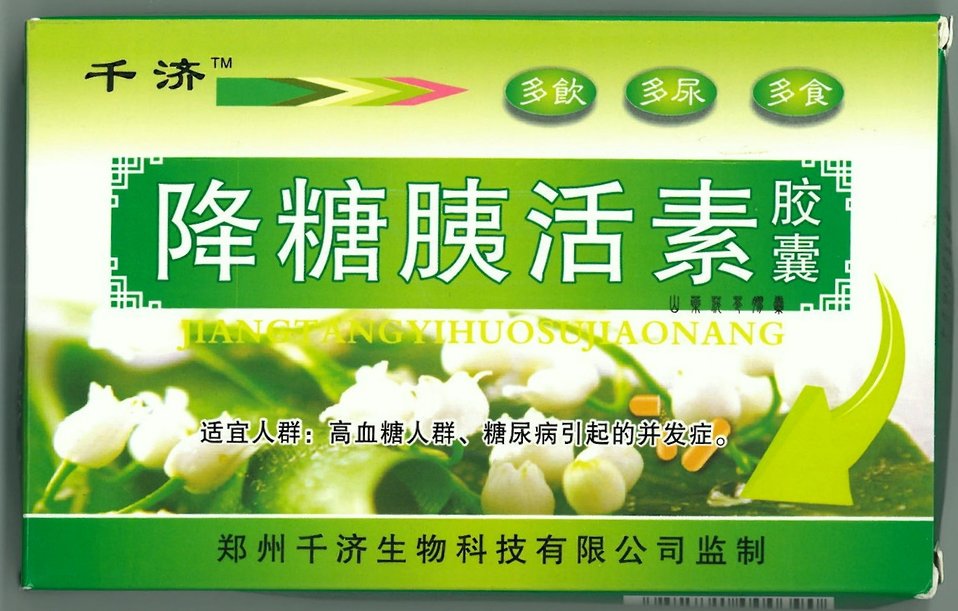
Illegally Sold Diabetes Treatments - Jiang Tang Yi Huo Su Jiao Nang

This product is illegally promoted as a natural alternative to diabetes medicine, but was found to contain three undeclared active ingredients, glyburide, metformin, and phenformin. FDA warns consumers to avoid unproven and potentially unsafe products sold as treatments for diabetes.